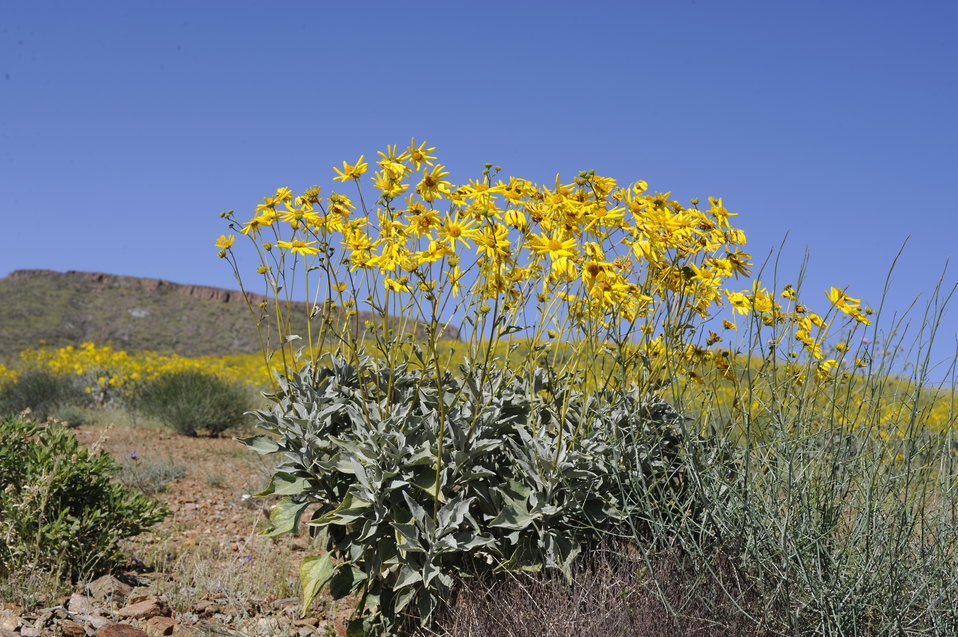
Brittlebush stands out on this hillside in the Sonoran Desert on the Cabeza PrietaNational Wildllife Refuge.